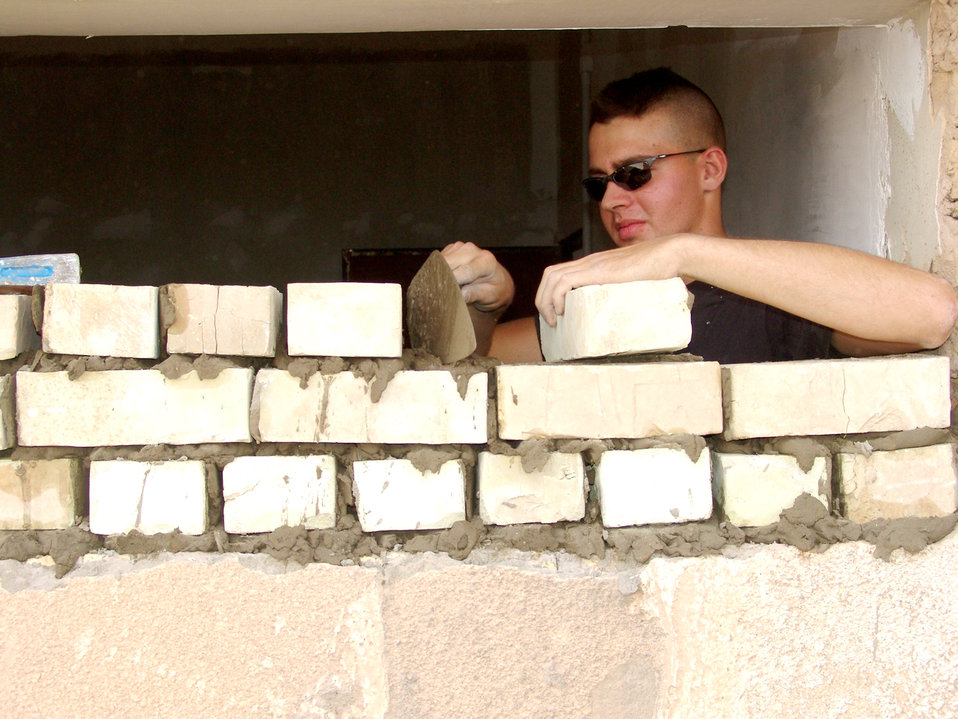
Red Horse engineers build Iraqi future

BAGHDAD, Iraq -- Airman 1st Class Michael Grimm repairs brickwork in an old Iraqi military building that will be used to improve the armoring on M-113 armored personnel carriers, offering greater protection to Airmen and Soldiers from insurgent attacks. He is deployed to the 557th Expeditionary Red Horse Squadron from the Pennsylvania Air National Guard.